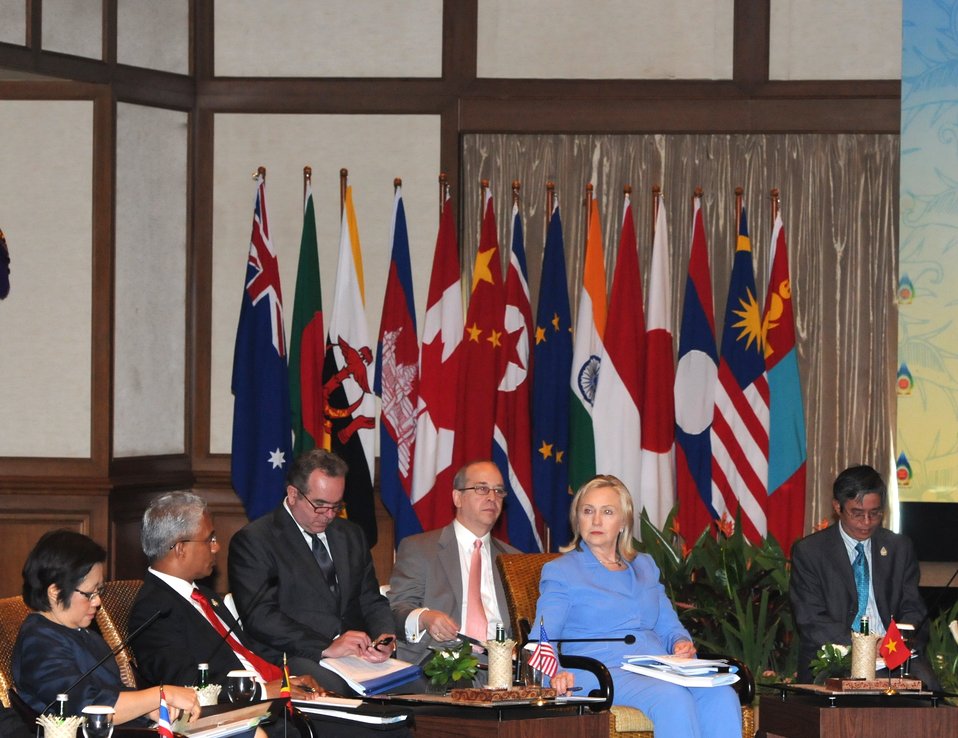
Thai Deputy Permanent Secretary Pinthong, Timor-Leste Foreign Minister Zacarias Albano da Costa, Assistant Secretary Campbell, NSC Director Russel, and Secretary Clinton Convene

From left to right, Thailand's Deputy Permanent Secretary for Foreign Affairs Chitriya Pinthong, Timor-Leste Foreign Minister Zacarias Albano da Costa, U.S. Assistant Secretary of State for East Asian and Pacific Affairs Kurt Campbell, U.S. National Security Council Director for Asian Affairs Daniel Russel, and U.S. Secretary of State Hillary Rodham Clinton convene during the ASEAN Regional Forum in Bali, Indonesia, on July 23, 2011.